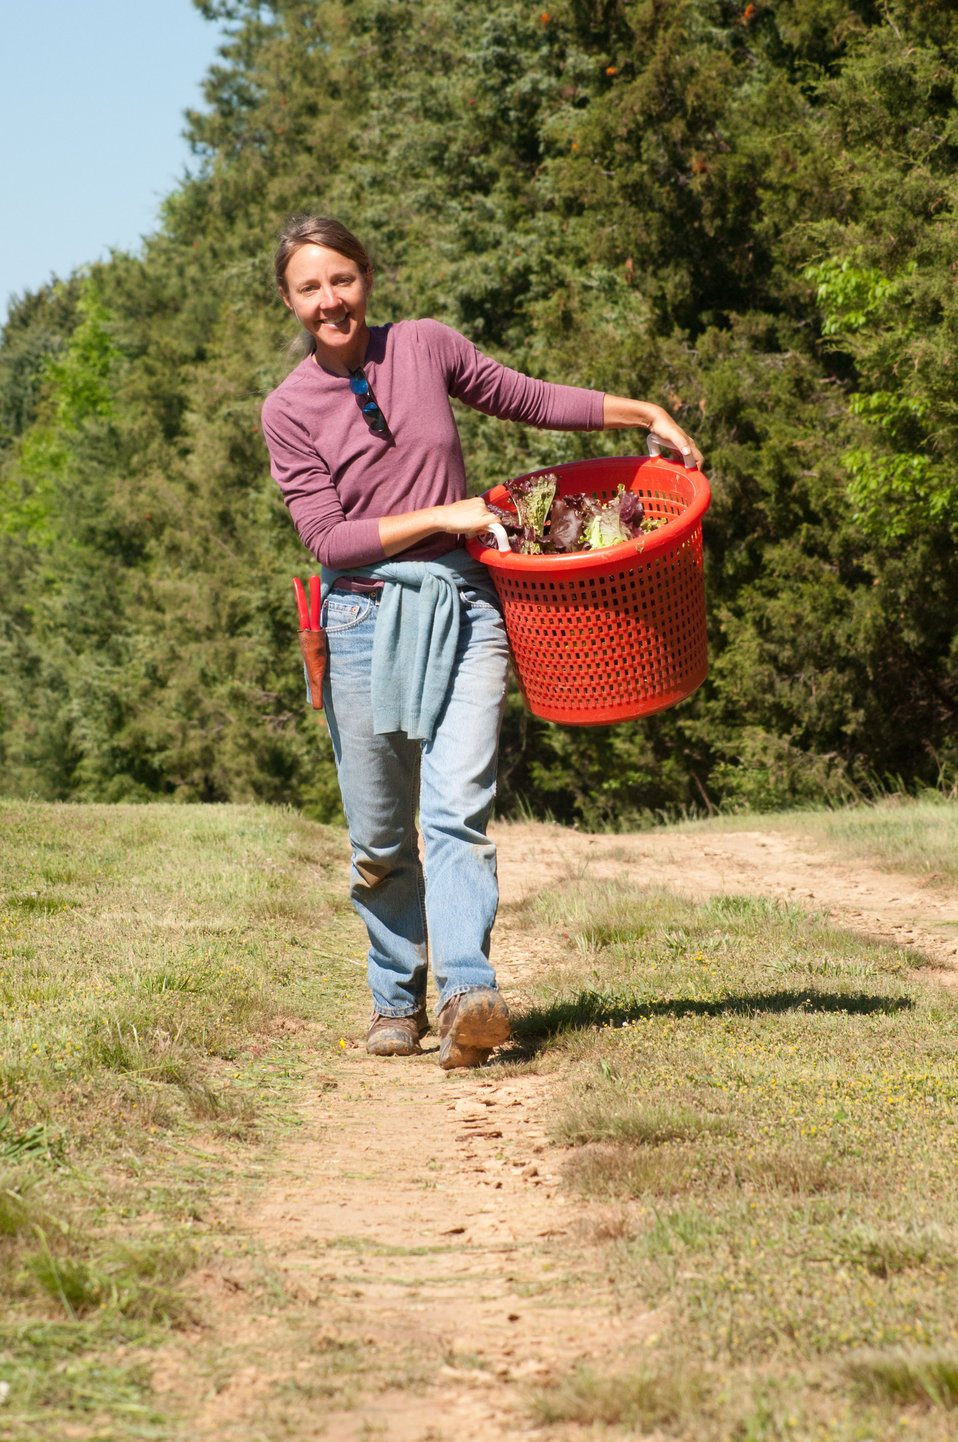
Amy's Organic Garden owner Amy Hicks can be found this May 5, 2011 morning, harvesting the greens at her farm in Charles City, VA. Ms. Hicks' farm participates with Fall Line Farms a local food cooperative in the Richmond, VA area that offers a wide variety of household food staples and specialty items on an ever changing inventory of fruits, vegetables, meats, soaps, eggs, cheeses, flowers, honey, pastas, sauces, syrups, baked goods, mushrooms, flour and grains. Suppliers post what they have on a Lulus Local Food online listing and customers (who pay seasonal dues) can make their selection. Then every Thursday suppliers team up with other suppliers to deliver orders to, one of several pick-up points, designated by the customer in or around the Richmond area.